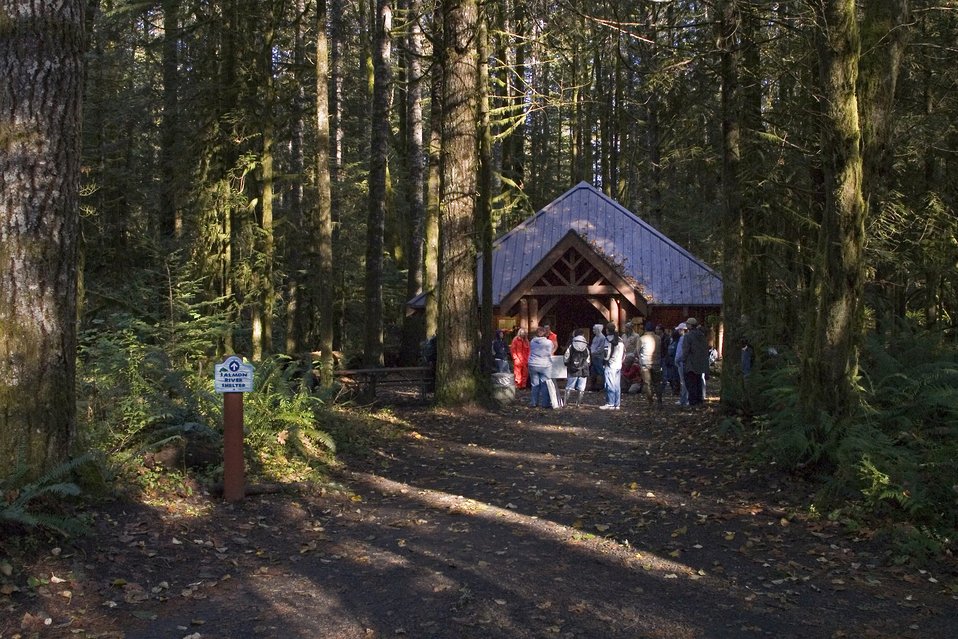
The Salmon River Shelter is used during the spring and fall by Wolftree and other groups for environmental education. Here the Reynolds Natural Resources Academy 12 and 11th grade students summarize there days activities.